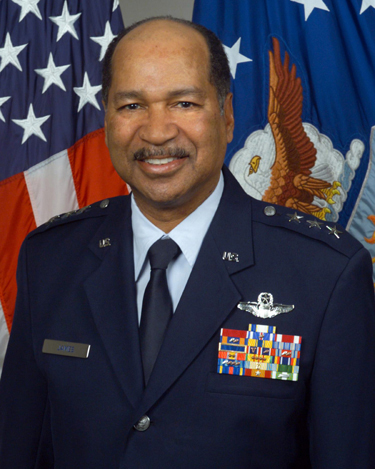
Daniel James III

Lt. Gen. Daniel James III who went on to head the Air National Guard